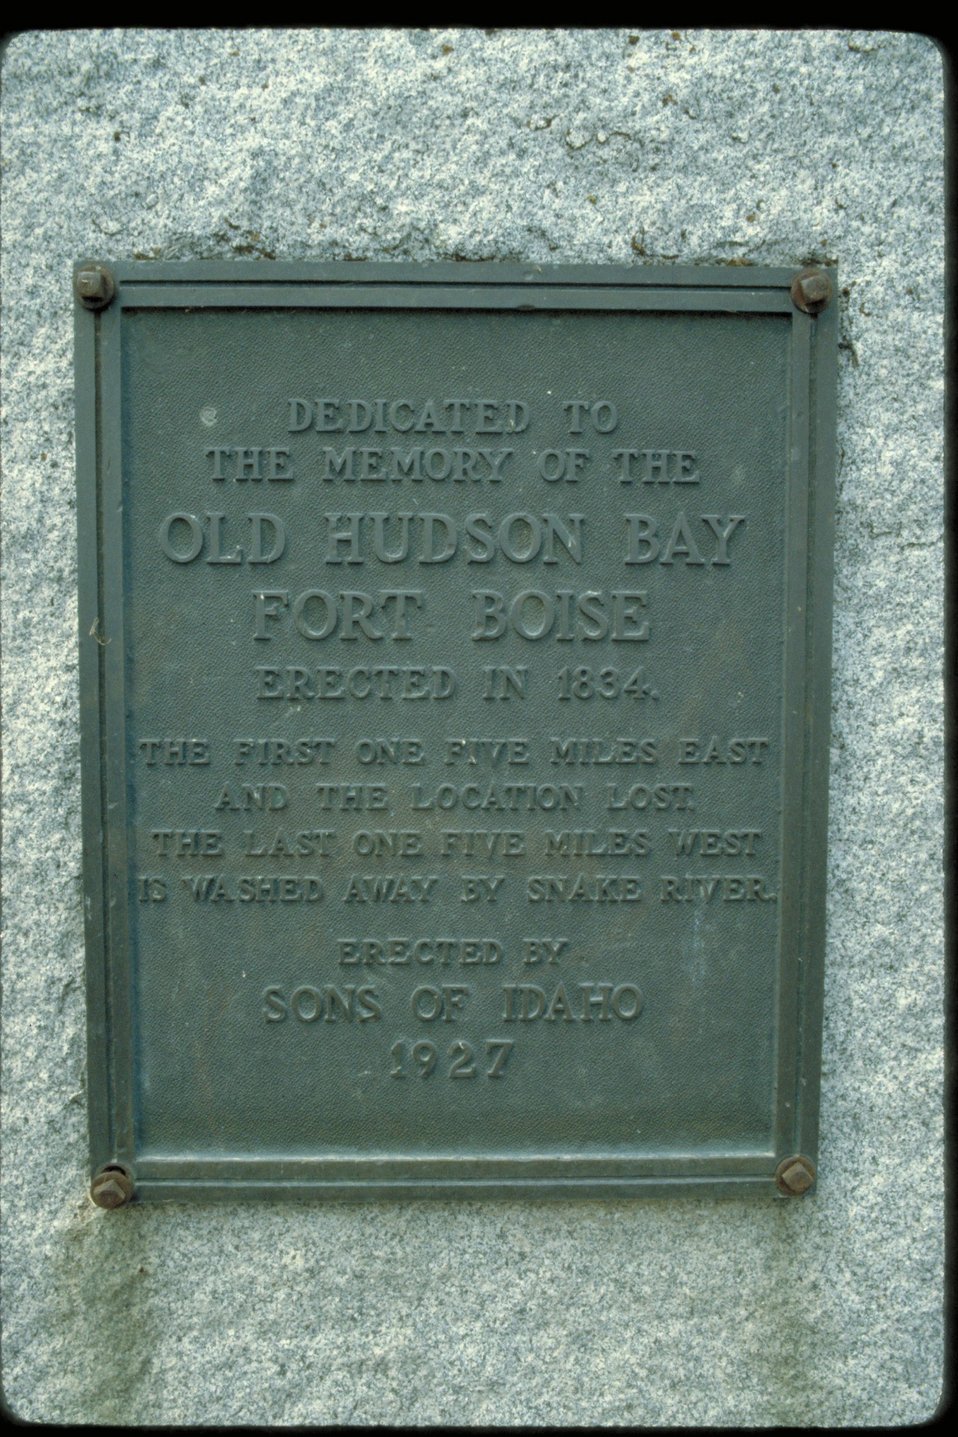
Fort Boise Monument Oregon Trail Lower Snake River District